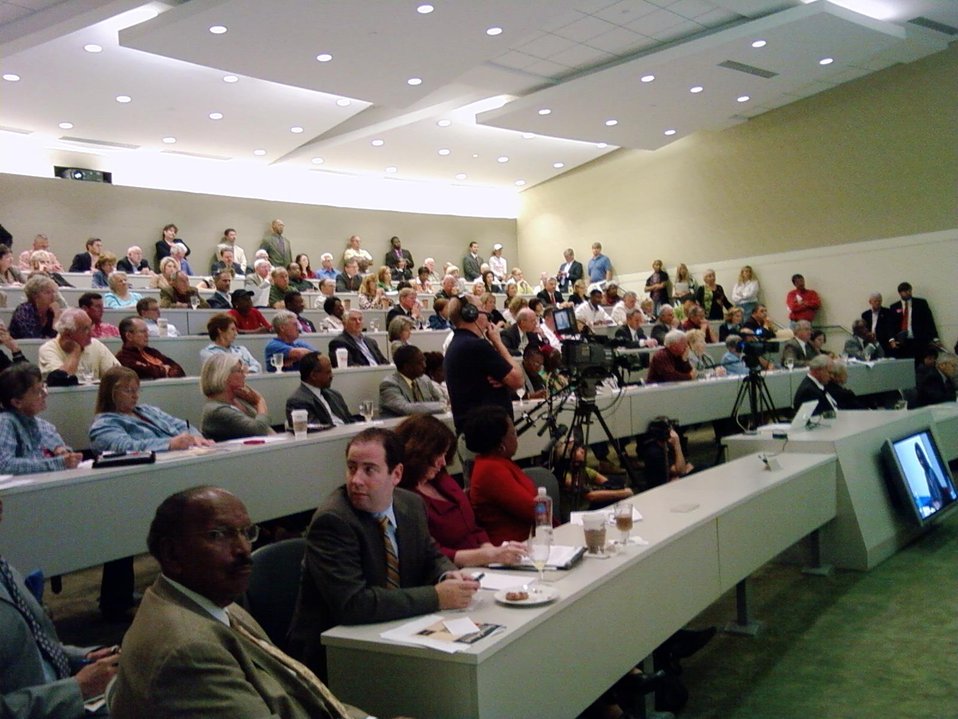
SC event 14

Broadband Field Hearing, in Charleston, South Carolina. 10-06-09